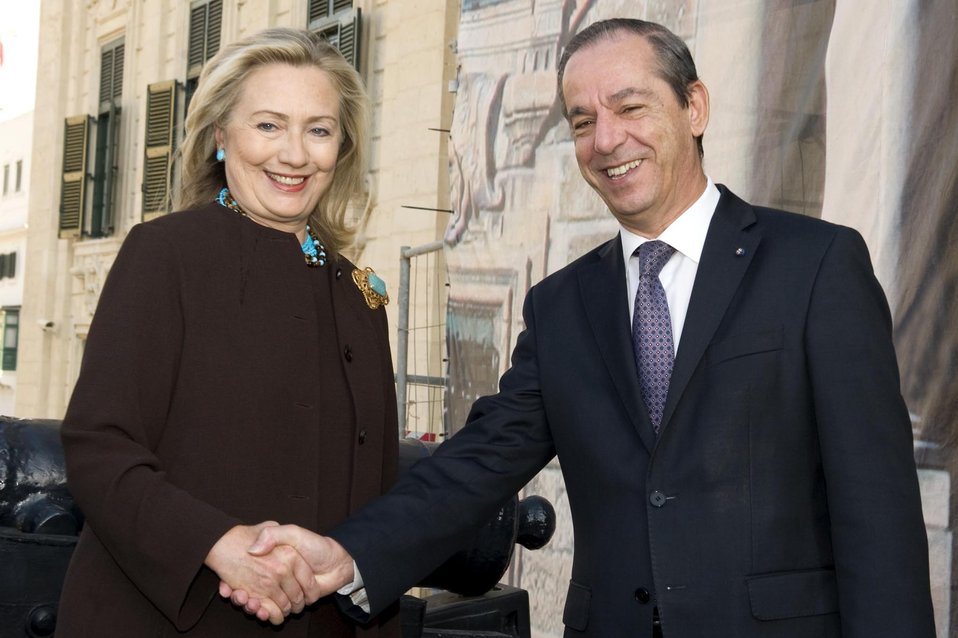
Secretary Clinton Is Welcomed By Maltese Prime Minister Gonzi

U.S. Secretary of State Hillary Rodham Clinton is welcomed by Maltese Prime Minister Lawrence Gonzi to the Auberge de Castille in Valletta, Malta, on October 18, 2011.